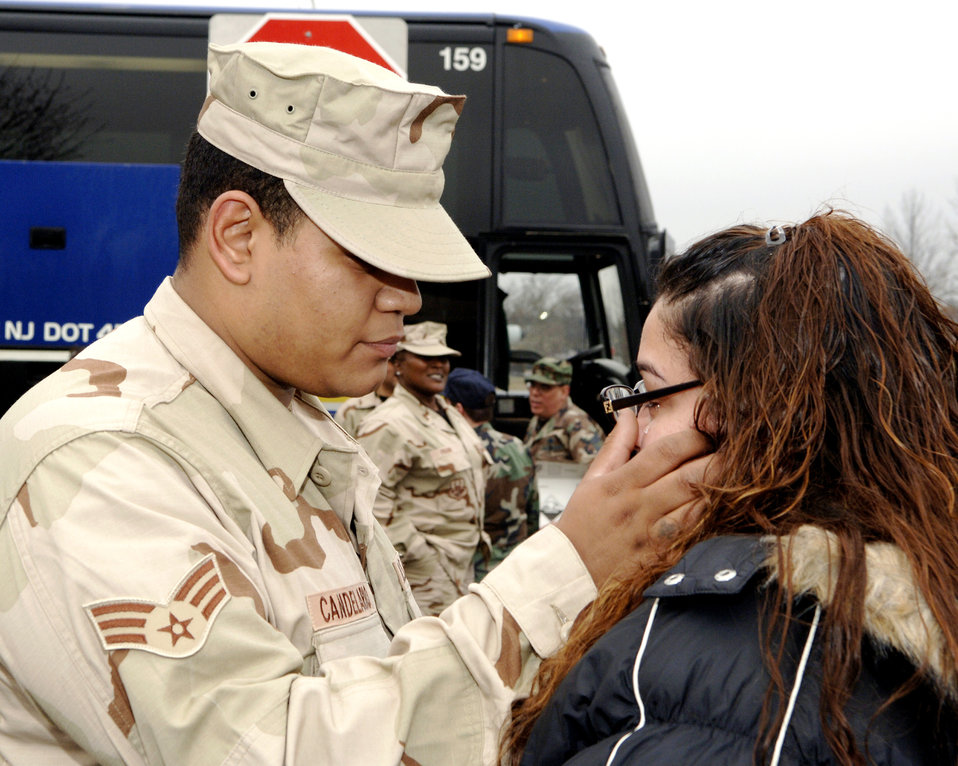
Saying goodbye

MCGUIRE AIR FORCE BASE, N.J. (AFPN) -- Senior Airman Isaac Candelario wipes tears from the face of his fiance, Jennifer Rivera, before deploying Jan. 23. Airman Candelario is assigned to the 88th Aerial Port Squadron here. Fourteen Airmen from the 88th and 35th APS deployed to Afghanistan for 120 days.